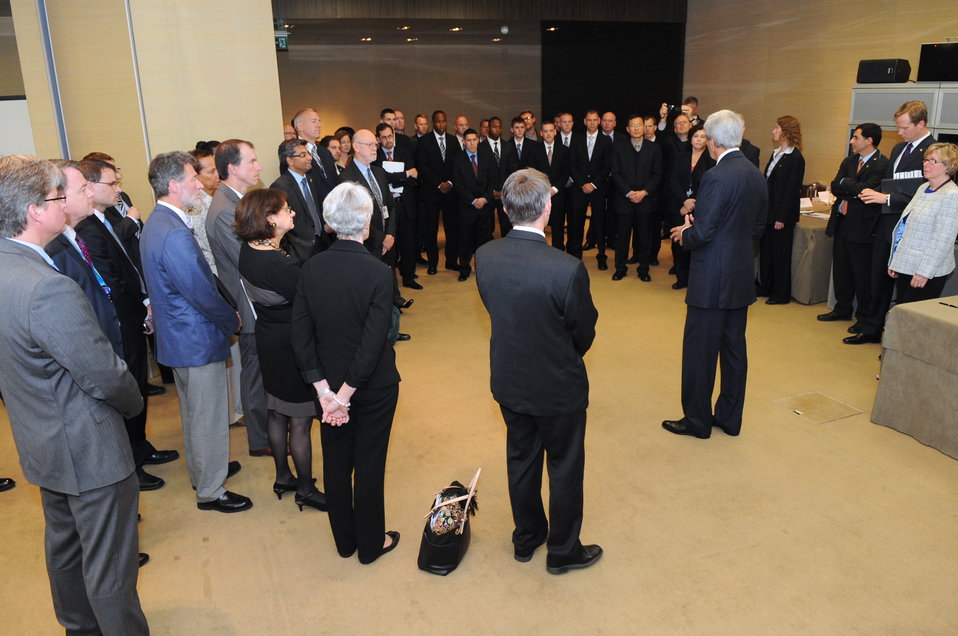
Secretary Kerry Thanks Staff for Help in Negotiating Syrian Agreement

1:03 p.m., September 14, 2013 - U.S. Secretary of State John Kerry addresses part of the interagency team that helped him negotiate an agreement with the Russian government to eliminate chemical weapons in Syria.